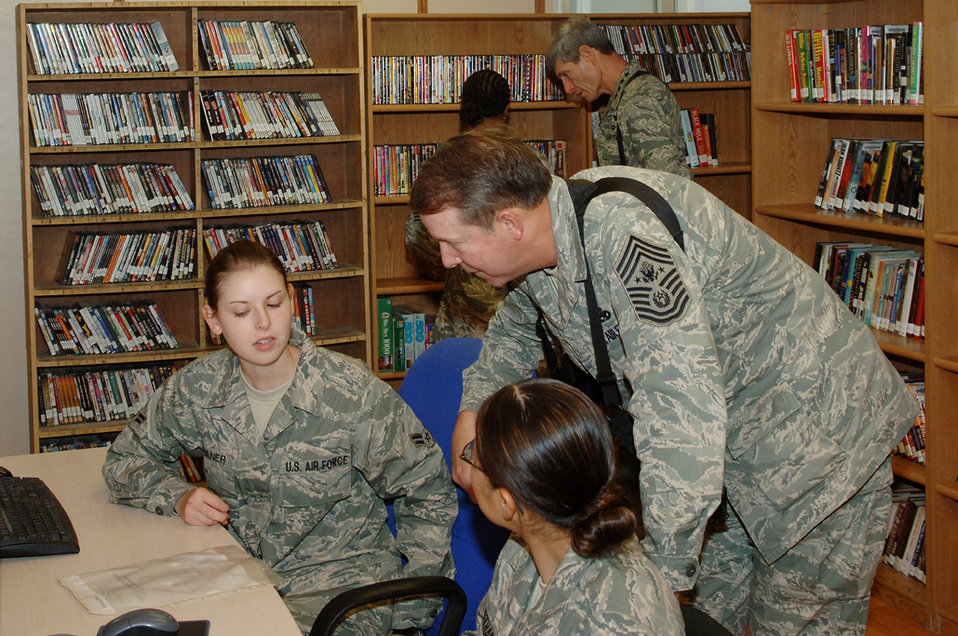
Chief of staff wraps up Middle East tour at Joint Base Balad

Chief Master Sgt. of the Air Force Rodney McKinley speaks with Airmen at the Housing-6 library on Joint Base Balad, Iraq, Oct. 25. Chief McKinley and Air Force Chief of Staff Gen. Norton Schwartz (background) concluded a week-long tour of the U.S. Central Command area of responsibility and the Horn of Africa with a visit to the 332nd Air Expeditionary Wing.